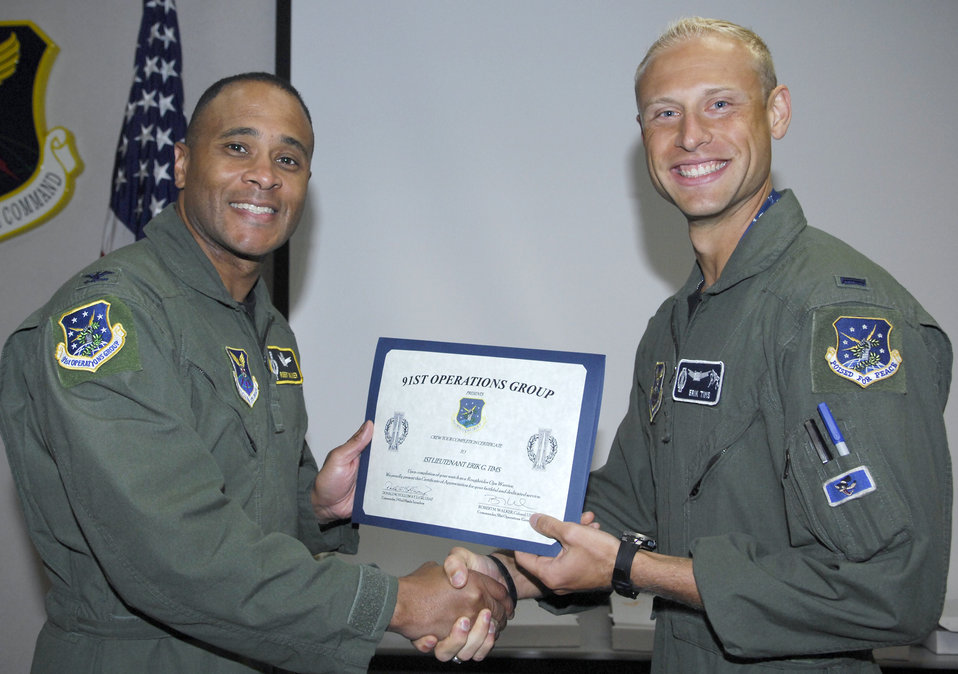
Tims

Col. Robert M. Walker gives a Crew Tour Completion Certificate to 1st Lt. Erik Tims at the 91st Missile Wing headquarters building Aug. 19, 2010 at Minot Air Force Base N.D. Lieutenant Tims took part in a once-in-a-lifetime event by pulling his last alert with his brother, 2nd Lt. Patrick Tims. The alert was Patrick's first, making the event truly unique. Erik and Patrick are both with the 742nd Missile Squadron there. Colonel Walker is the 91st Operations Group commander there.